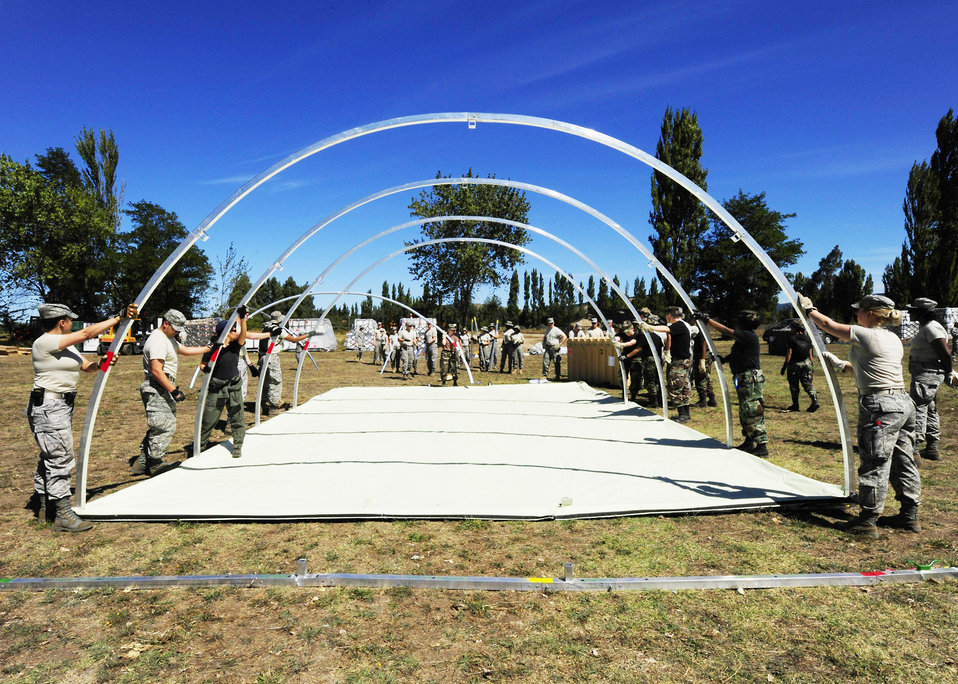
Airmen build hospital in Chile

Airmen from an Air Force Expeditionary Medical Support team along with members of the Chilean army build a mobile hospital March 10, 2010, in Angol, Chile. About 60 medical Airmen will work alongside local Chilean medics to provide medical support to the local community.